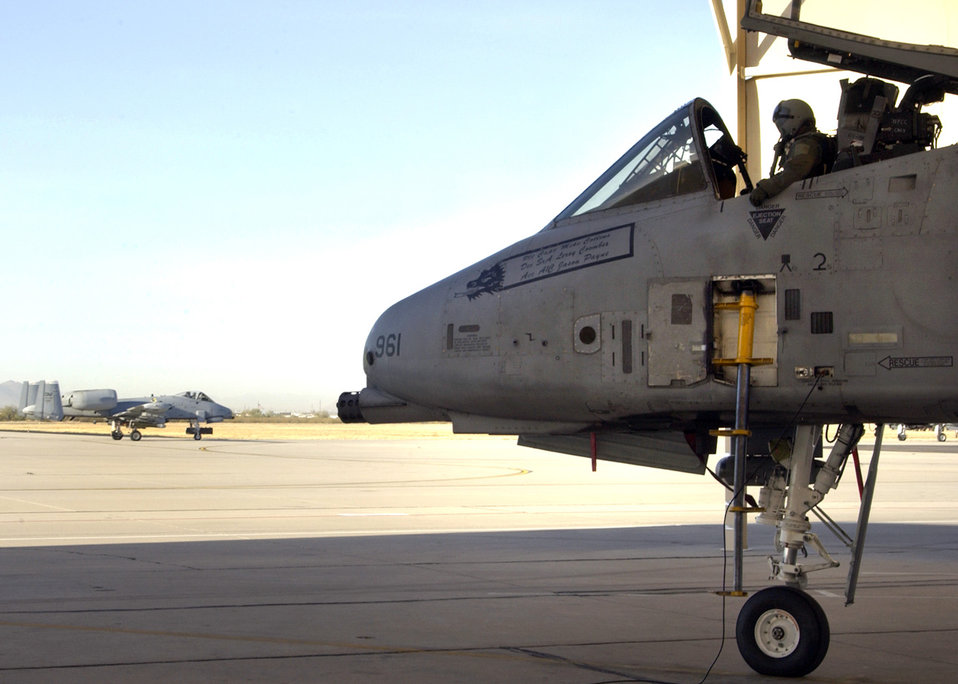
Preflight inspection

DAVIS-MONTHAN AIR FORCE BASE, Ariz. (AFPN) -- Capt. Scott Michalowski does a preflight inspection before takeoff. The 357th Fighter Squadron continuously trains for real world deployment situations. Captain Michalowski is a pilot with the 357th FS.